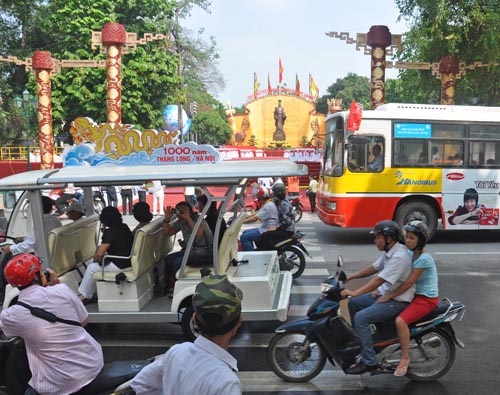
Hanoi celebrates 1,000 years as capital of Vietnam.